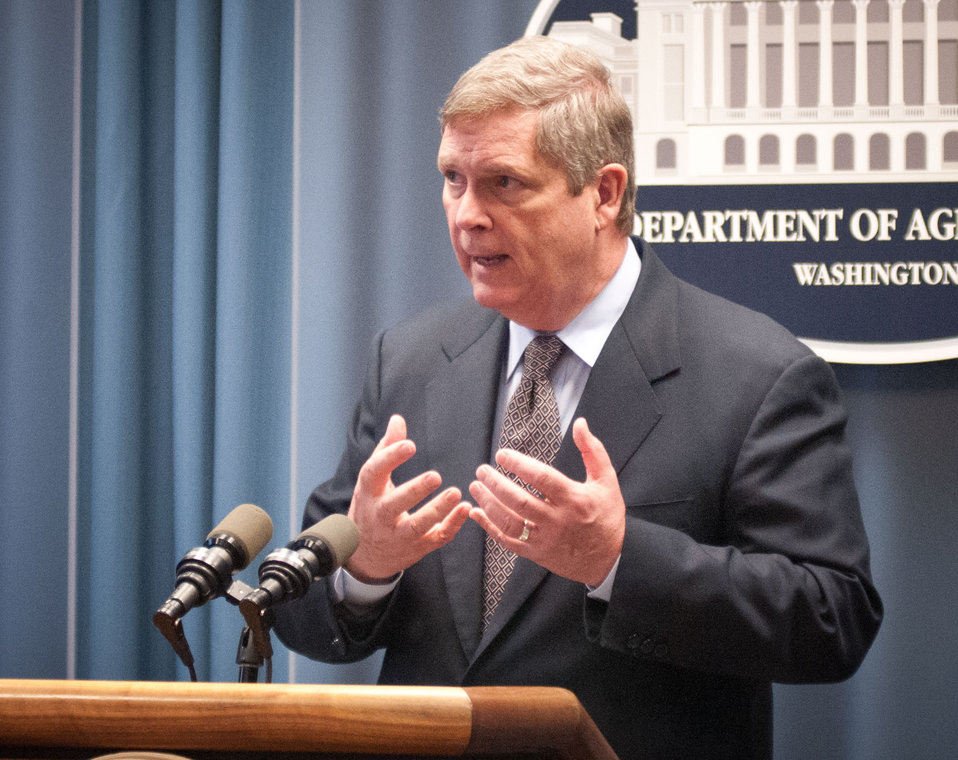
Agriculture Secretary Tom Vilsack talked about agriculture including the delivery, processing and other elements of the food chain the effect jobs in America, during a briefing, and question and answer period for stakeholders about the Agriculture FY2013 budget in Washington, D.C. on Monday, February 13, 2012.